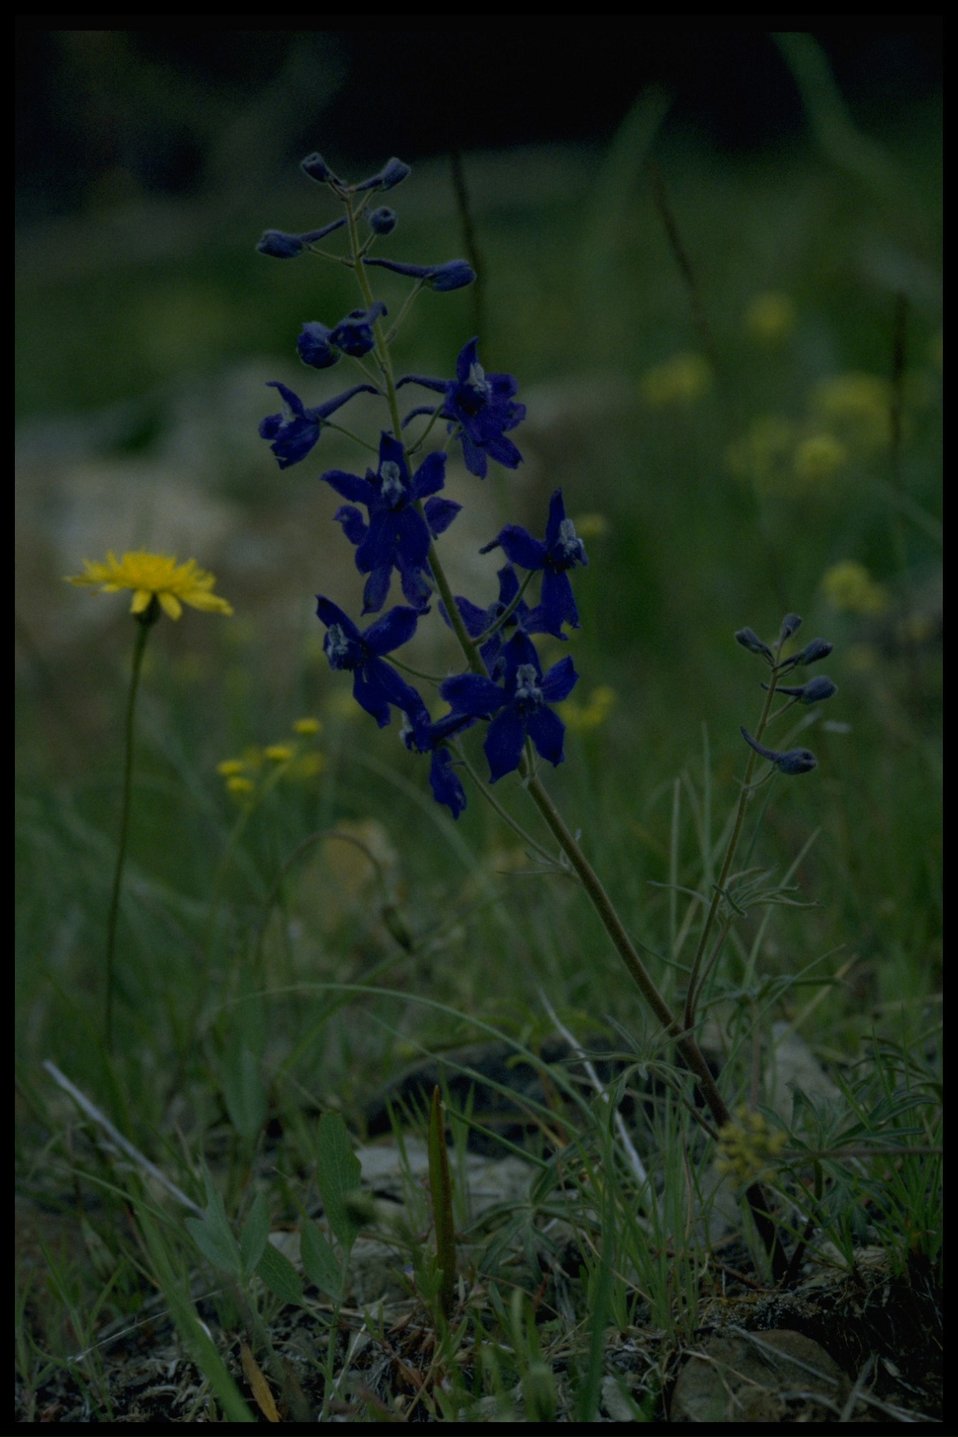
Medium shot of prairie dandelion (Microseris troximoides) and upland larkspur (Delphinium nuttallianum).